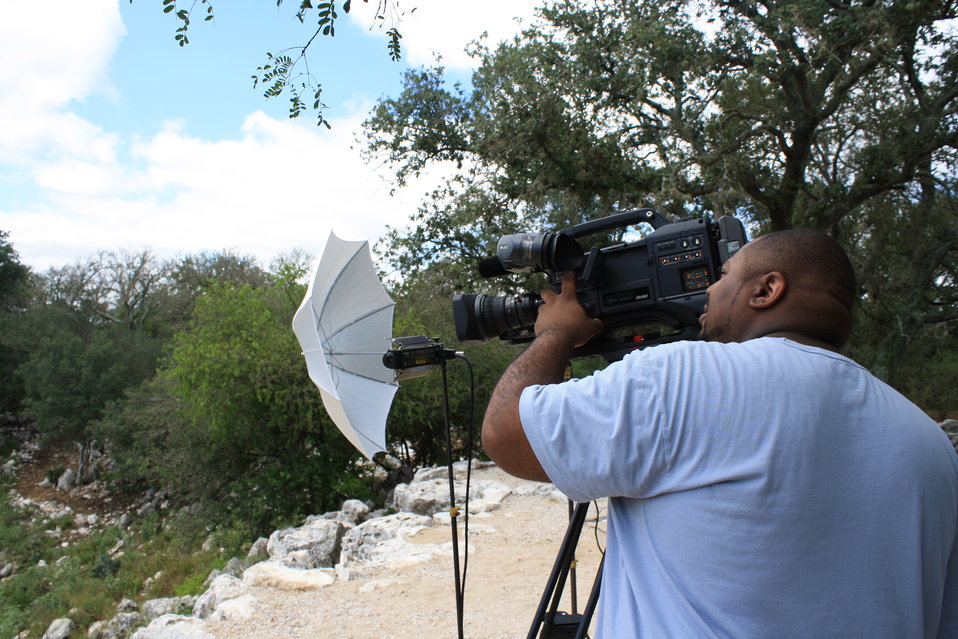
Preparing cameras for BatsLIVE broadcast